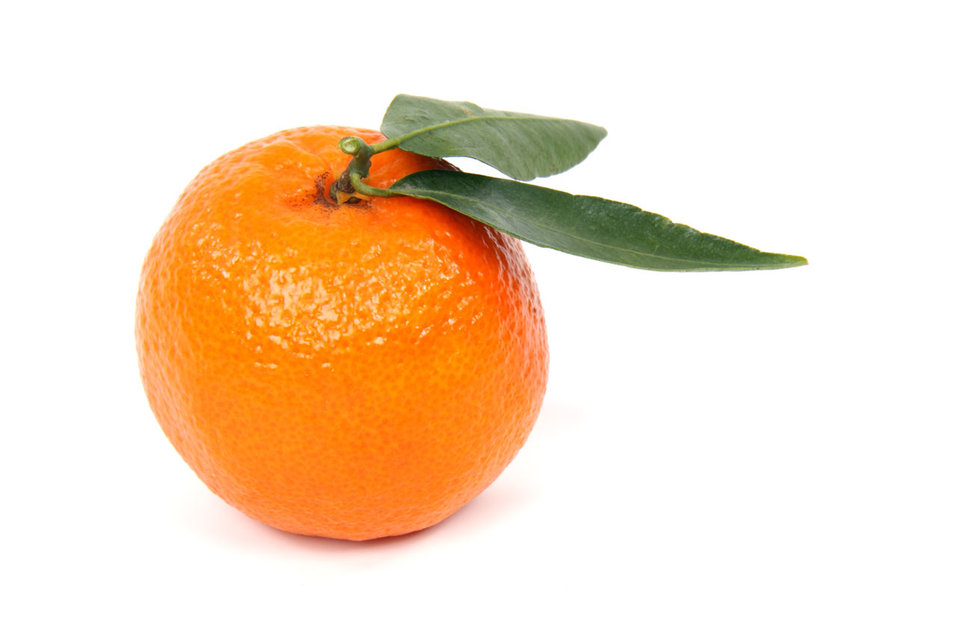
Clementine

Single clementine isolated on white background.